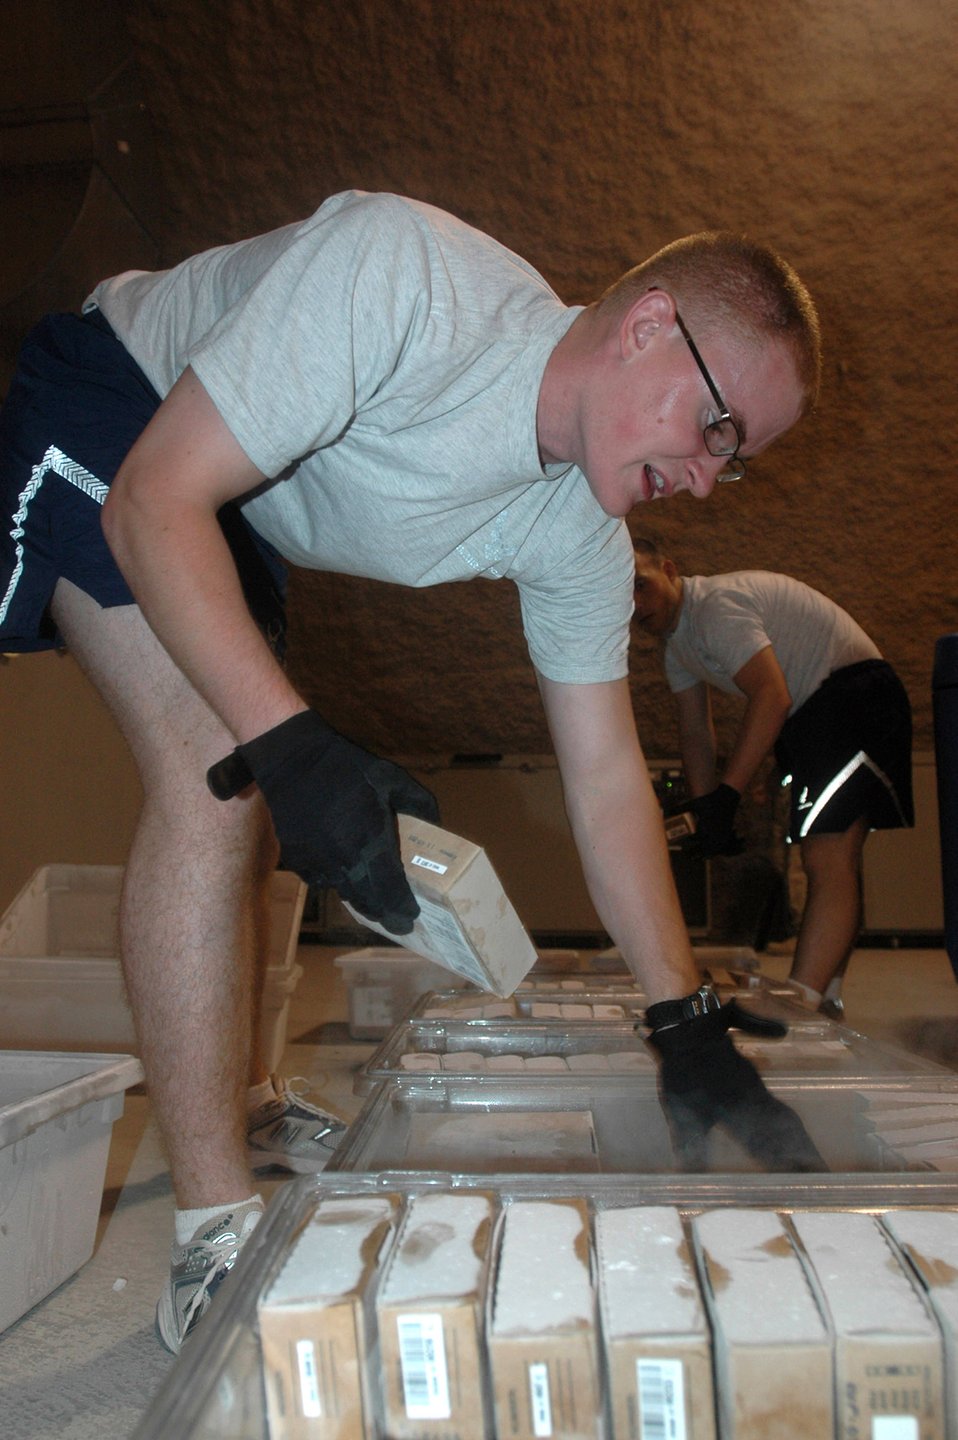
Blood center supports U.S., coaltion warfighters

Airman 1st Class Josh Muse sorts blood components by blood type Aug. 4 in Southwest Asia. From here, the components are processed into the Transportable Defense Blood Standard System, which keeps track of each unit. Airman Muse is assigned to the 379th Air Expeditionary Wing.